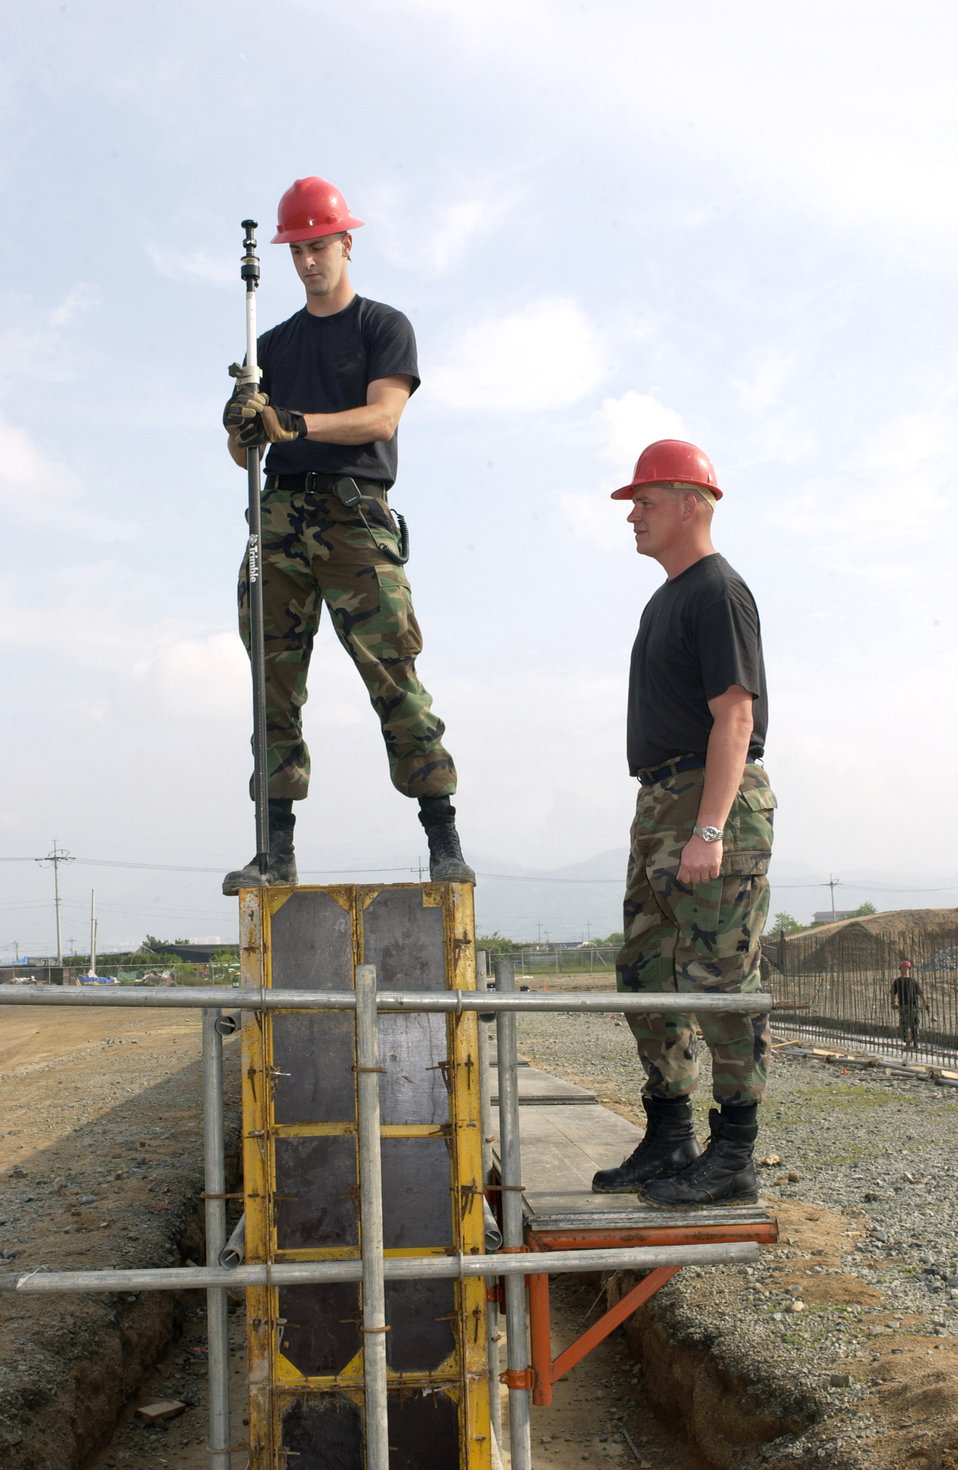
Red Horse squadrons unite in the fight

Airman 1st Class Tyler Robinson holds a rod surveyor while Tech. Sgt. Richard Freer explains how to survey a site in Kimhae, Korea. Airmen from Red Horse squadrons at Nellis Air Force Base, Nev.; Barksdale AFB, La.; Andersen AFB, Guam, and Osan Air Base, South Korea, are working through September on various quality-of-life improvement projects in South Korea. Airman Robinson is with Barksdale's 307th Red Horse Squadron; Sergeant Freer is with Osan's 554th RHS.